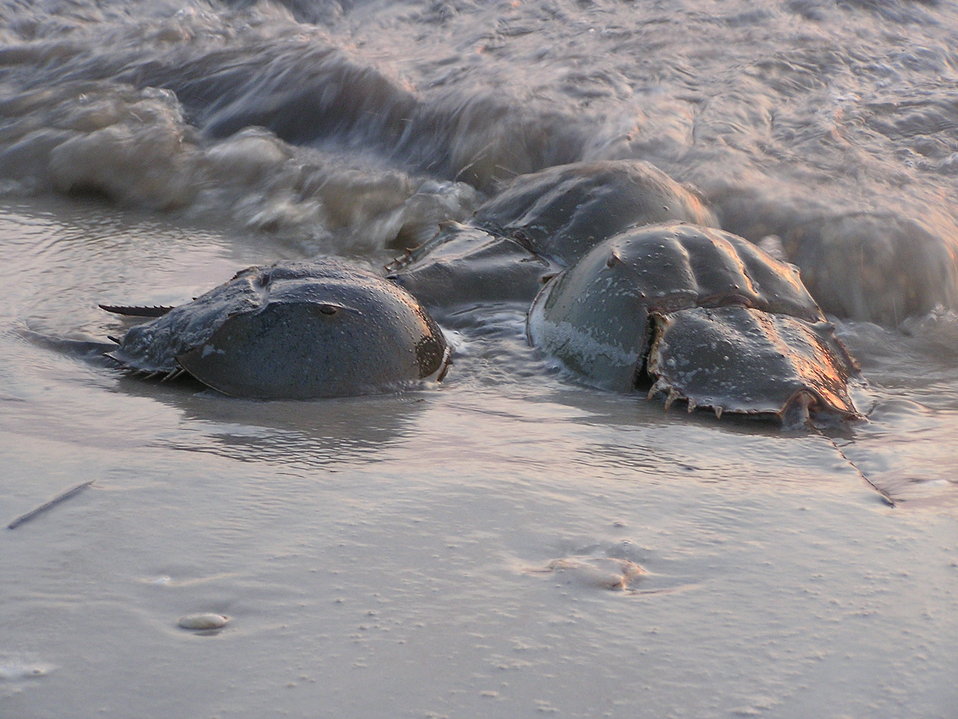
Horseshoe crabs at Cape May National Wildlife Refuge.